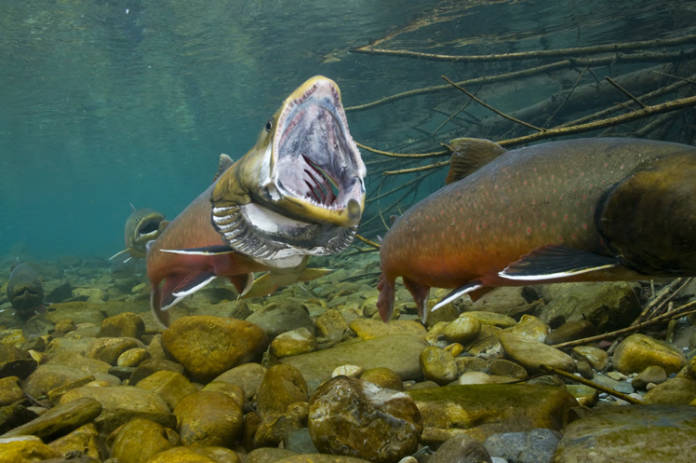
Bull Trout Open Mouth

Region 6 bull trout coordinator Wade Fredenberg teamed with noted Geographic photographer Joel Sartore in 2009 to capture underwater and aquarium-staged shots of bull trout in British Columbia’s Wigwam River drainage, the headwaters of the Kootenai River, known as the “crown jewel” of bull trout spawning areas.